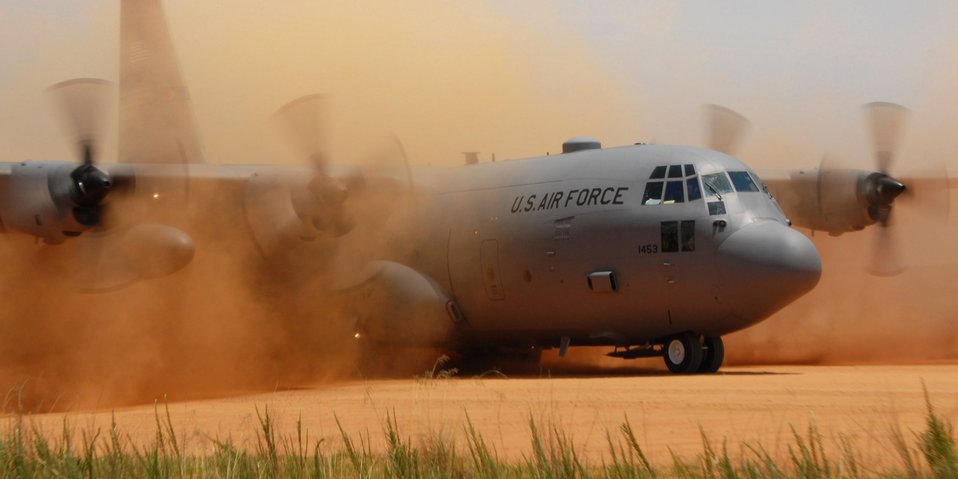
Getting down and dirty

A C-130 Hercules cargo plane performs a tactical landing on a dirt strip at the Sicily Landing Zone on Fort Bragg, N.C. Paratroopers re-enacted a D-Day jump to the zone. The C-130 is assigned to the North Carolina Air National Guard's 145th Wing.